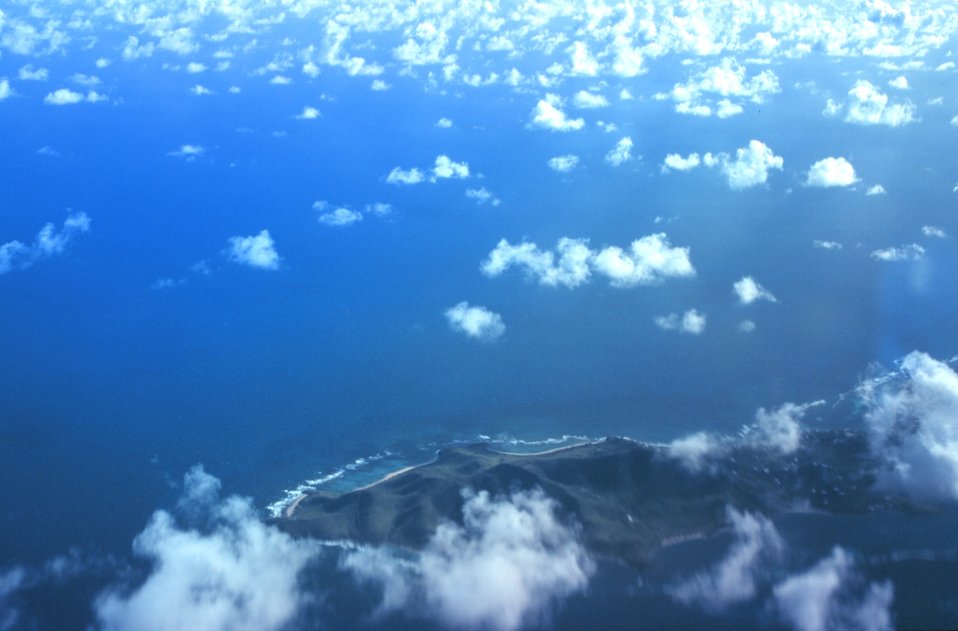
Aerial view of Udall Point at the east end of St. Croix.